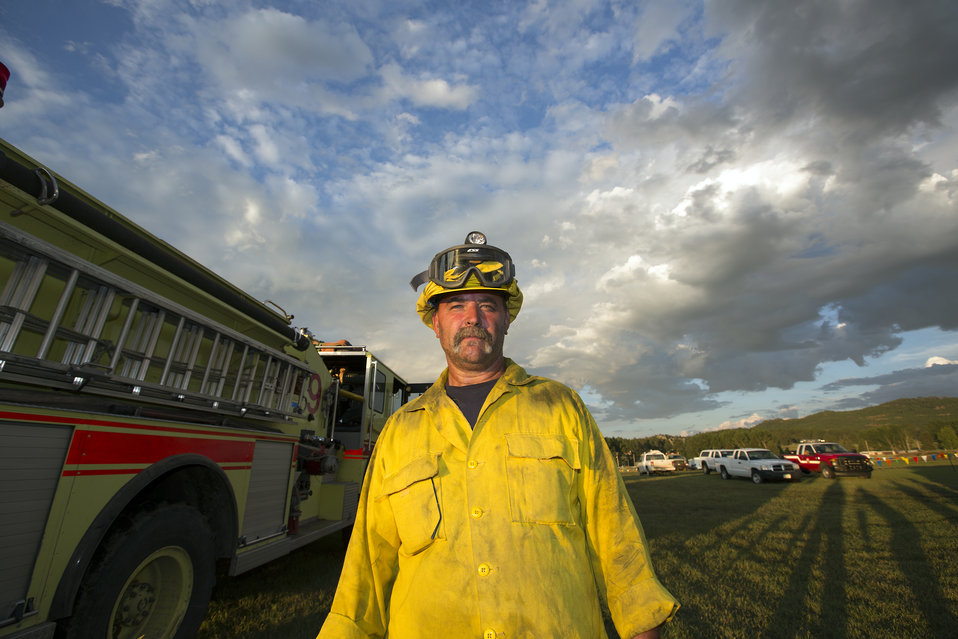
Rapids City, SD Fire Department Ellsworth U.S. Air Force Base fireman Scott R. Van Drew fights the Myrtle Fire in Black Hills National Forest, SD on July 24, 2012.